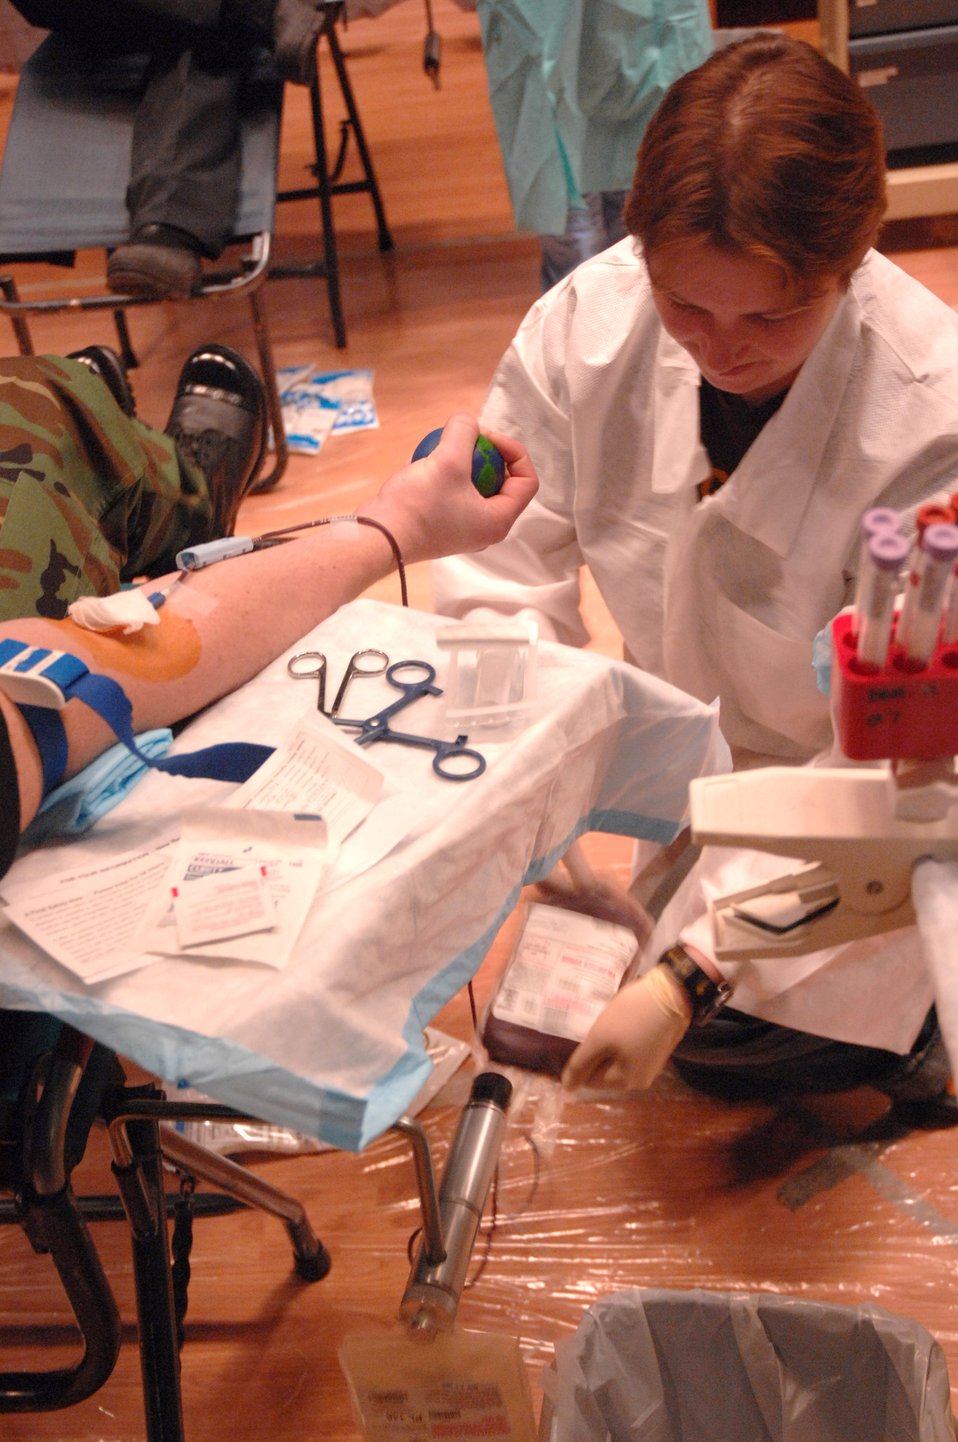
Blood donation

Susan Baker, manager of Blood Bank of Alaska Fairbanks Center, checks the blood collection of Airman Kyle Kremer during the Blood Bank's mobile blood drive Nov. 21 at Eielson Air Force Base, Alaska. The Blood Bank of Alaska supplies blood to military and civilian hospitals throughout Alaska. Airman Kremer is with the 354th Medical Group.